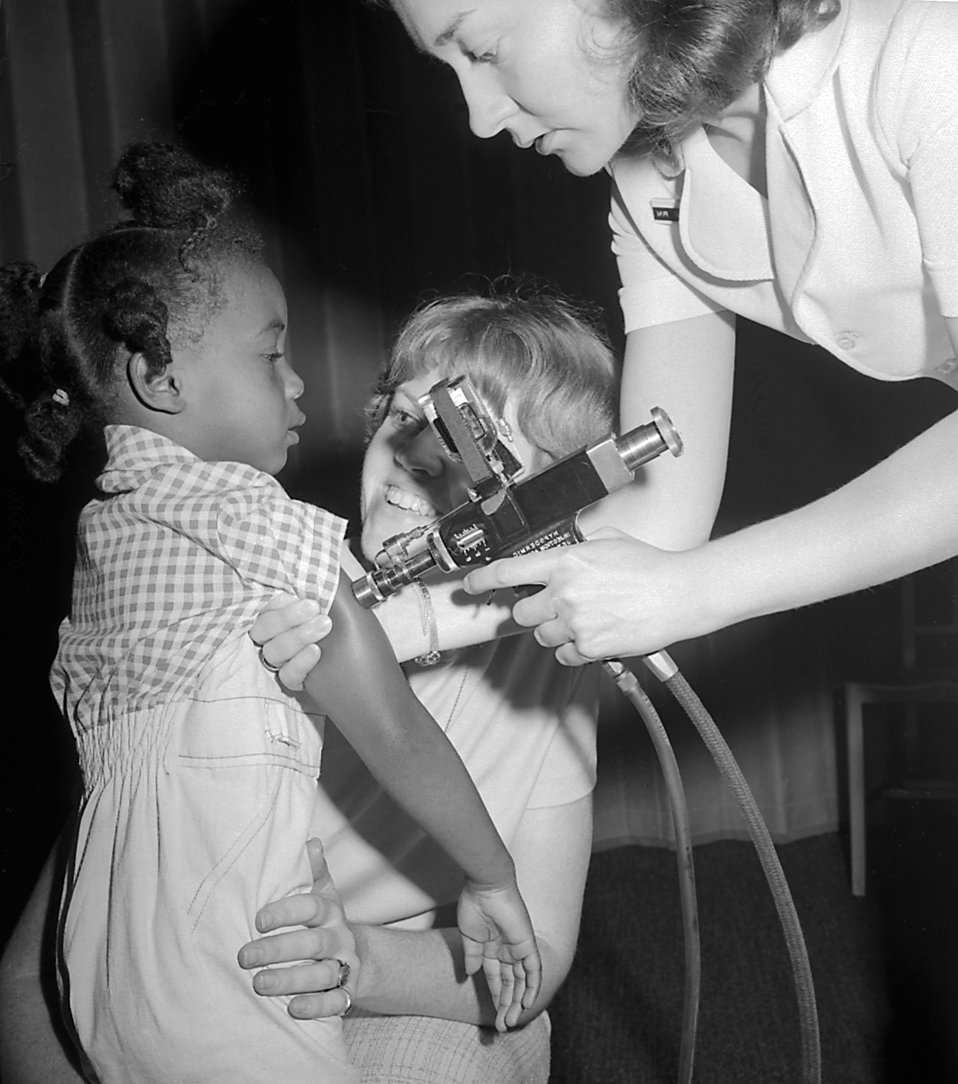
A young child undergoing immunization with a jet injector at the Well-Baby Clinic in Dekalb County, Georgia, 1977.